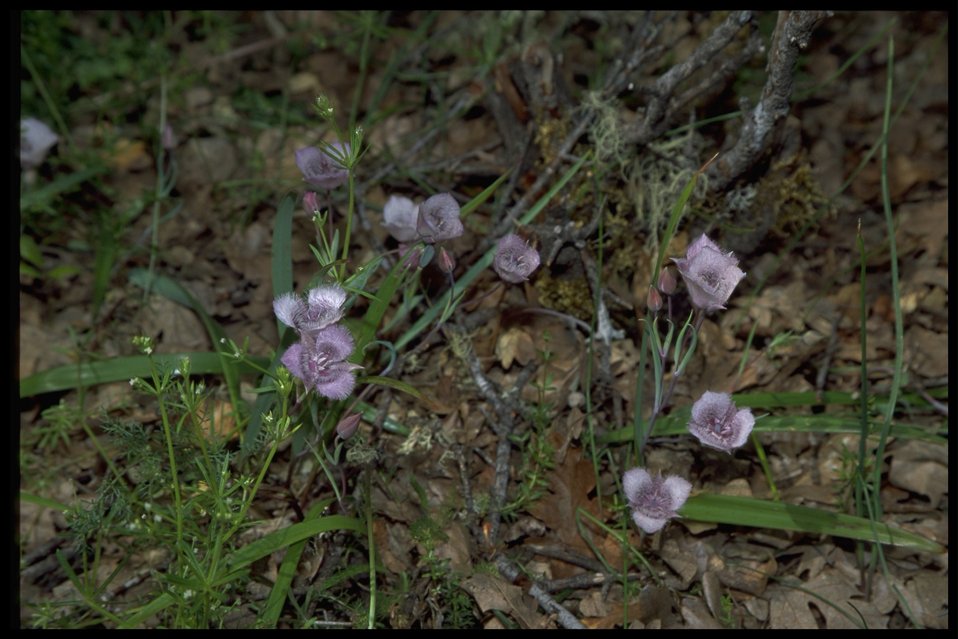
Medium shot of Calochortus tolmiei.